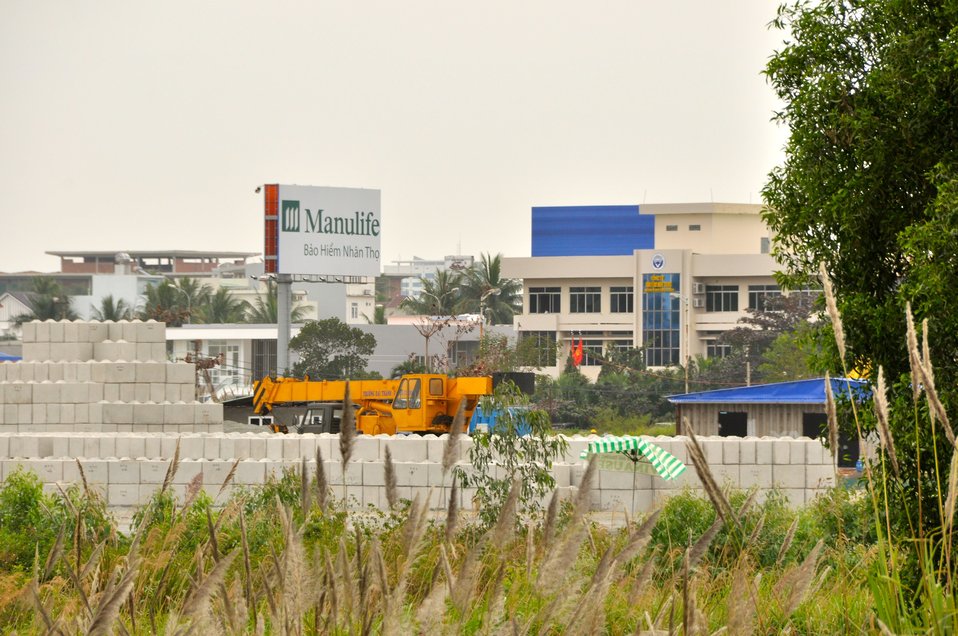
Site Preparation for Environmental Remediation of Dioxin Contamination at Danang Airport

Danang Airport, January 22, 2013

Photo: Richard Nyberg @USAIDVietnam

Photo: Richard Nyberg @USAIDVietnam
ort Remediation Site Visit